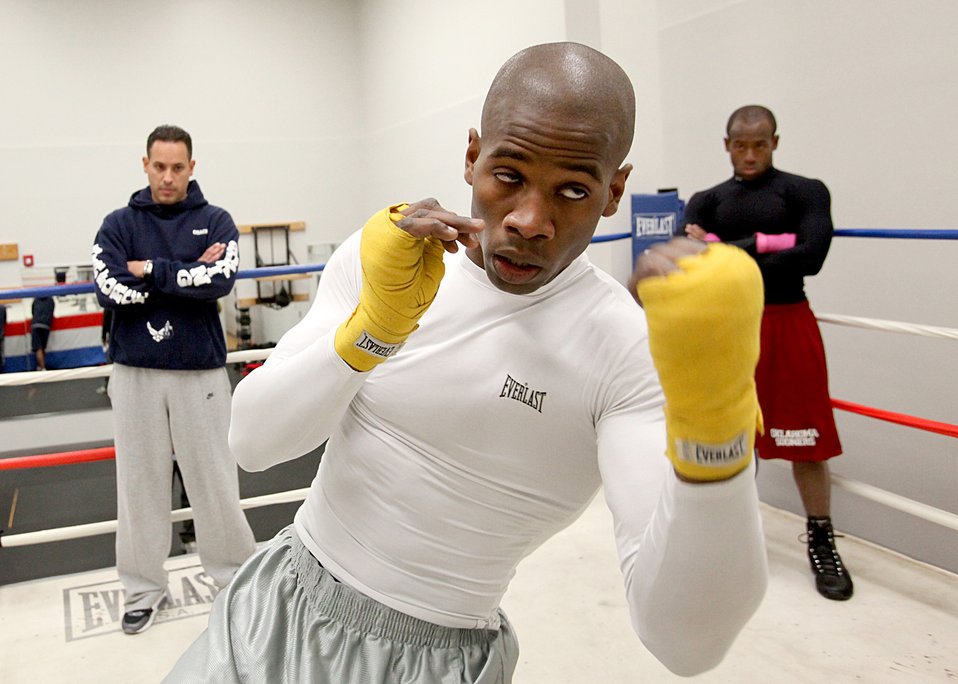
Air Force boxing

Air Force camp boxer Gary Griffin, of Stewart Air National Guard Base, N.Y., throws an uppercut Jan. 10, 2011, while boxing coach Steven Franco (left), and Daniel Logan (right), from Tinker Air Force Base, Okla., watch.